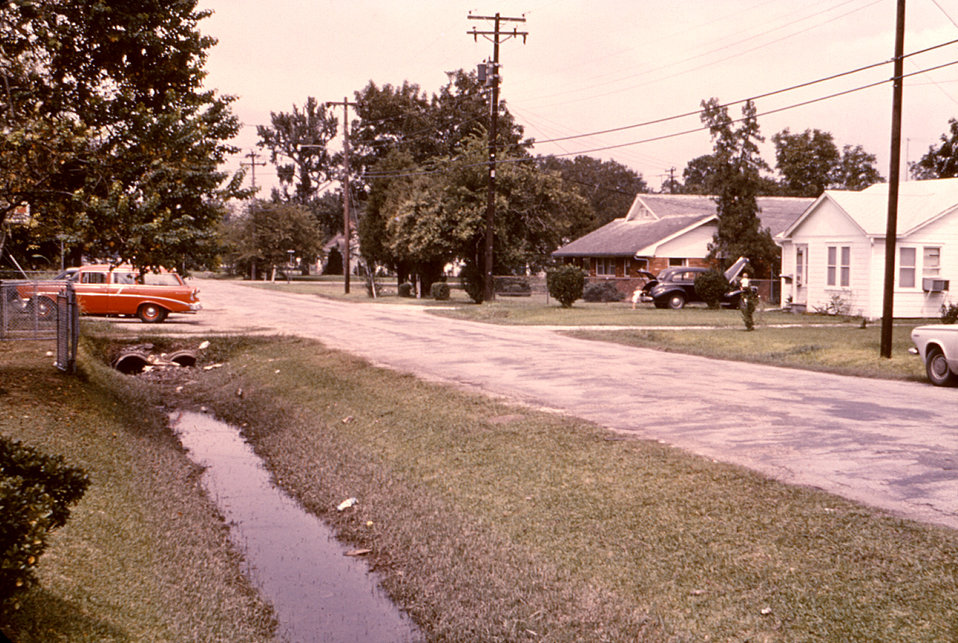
This 1974 photograph depicts a roadside drainage ditch, which was an ideal breeding ground for the Culex pipiens mosquito.